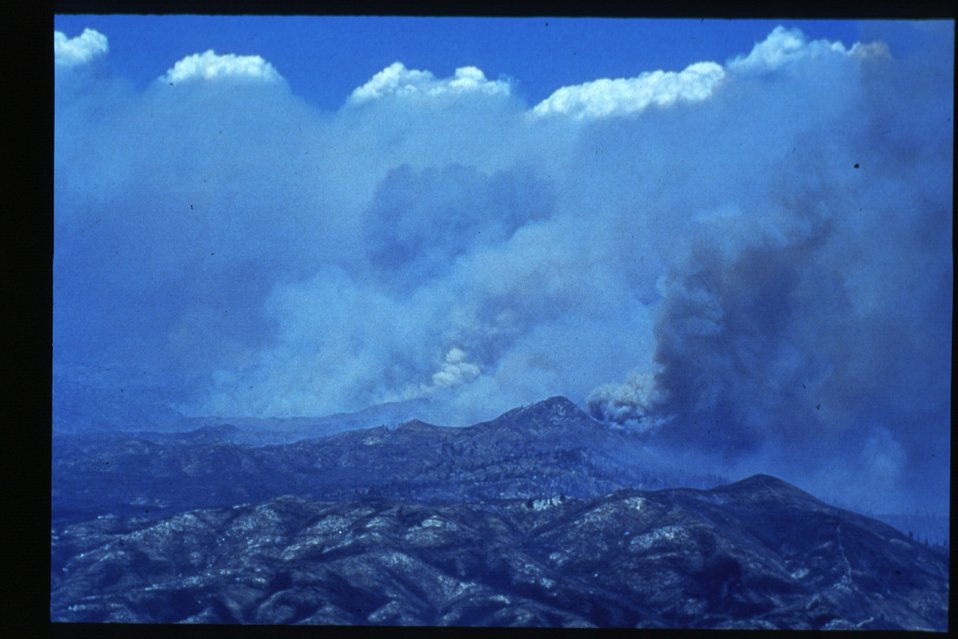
Boise Foothills Fire Danskin Mountains and South Fork of Boise River Smoke Four River Field Office LSRD Lower Snake River District